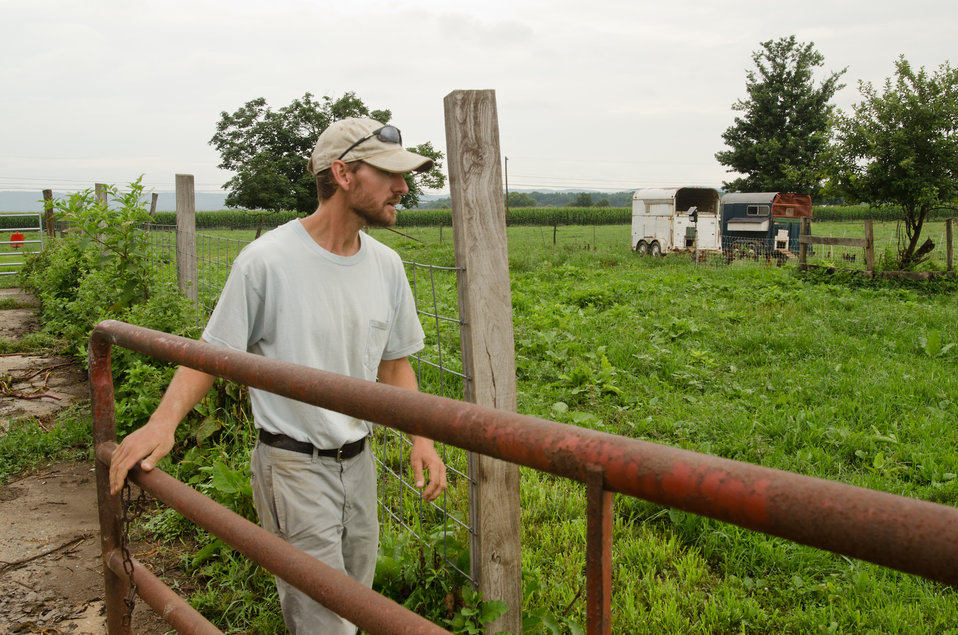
Farm assistant George Kloph opens a gate to one of the organic chicken pastures, to check on the health and safety of laying hens at Nick’s Organic Farm, in Adamstown, MD, on Friday, July 12, 2013. The fence helps keep predators away from the chickens. Discarded horse trailers have been repurposed as coops with nests on the side that allow for easy egg harvesting. The farm, owned by Nick Maravell, produces Black Angus beef, chicken, turkey, eggs, hay, soybeans, corn, alfalfa, orchard grass, rye; and other crops. The cattle are100% grass-fed receiving certified organic pasture, certified organic hay (in winter), water and mineral salts mixed with sea kelp. The cattle are not fed hormones, antibiotics or animal products. Poultry feed from grain is ground from organic grain. The poultry also graze on organic pastures. The farm has conducted on-farm research with federal, state and non-profit agencies to refine organic practices. An organization such as the U.S. Department of Agriculture (USDA) Agricultural Research Service (ARS) center in Beltsville has been able to conduct research to improve organic crops and to breed and manage the cattle so that they have.